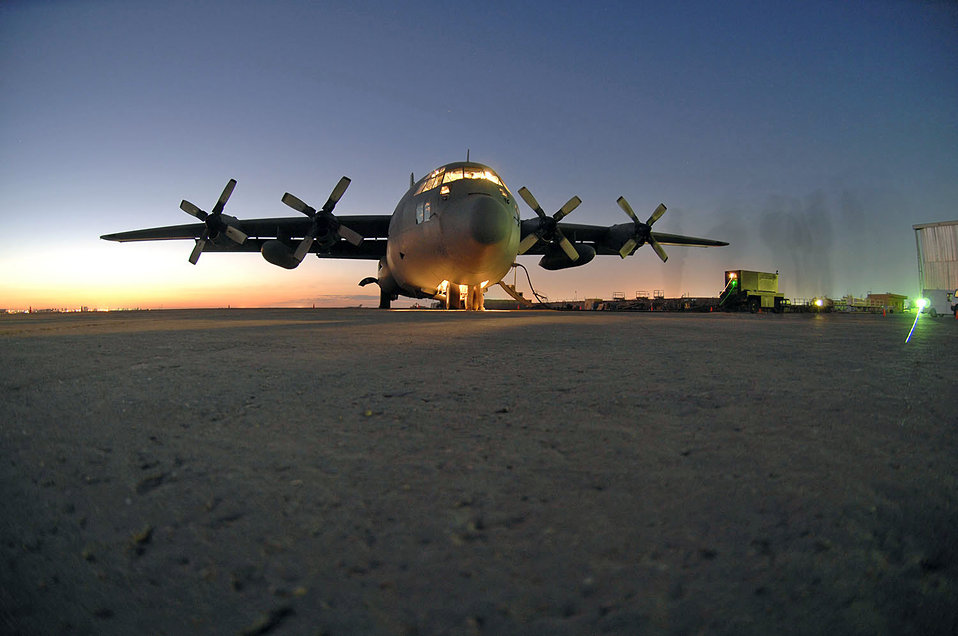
Airmen aid in Iraqi election ballot transport

Master Sgt. Louis Carter performs a preflight inspection on an Iraqi C-130E Feb. 2 at Sather Air Base, Iraq. The C-130 was one of two aircraft on its way to pick up Iraqi election ballot boxes. Sergeant Carter is a 321st Air Expeditionary Airlift Squadron combat aviation adviser deployed from the 550th Special Operations Squadron at Kirtland Air Force Base, N.M.